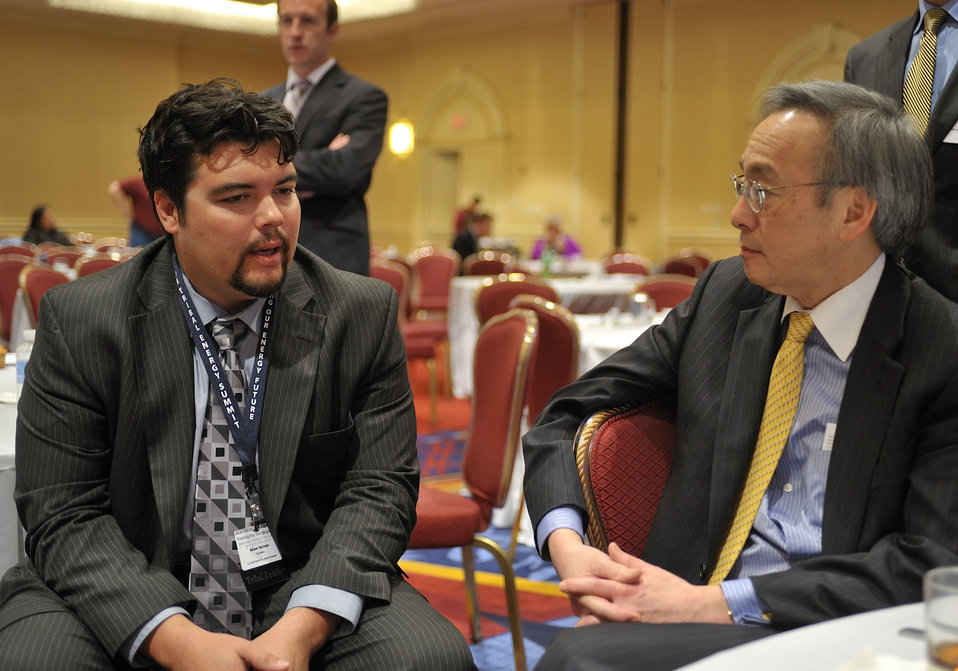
Tribal Energy Summit

Secretary Chu chats with Adam Geisler, La Jolla Band of Luiseno Indians, La Jolla Tribal Council Secretary